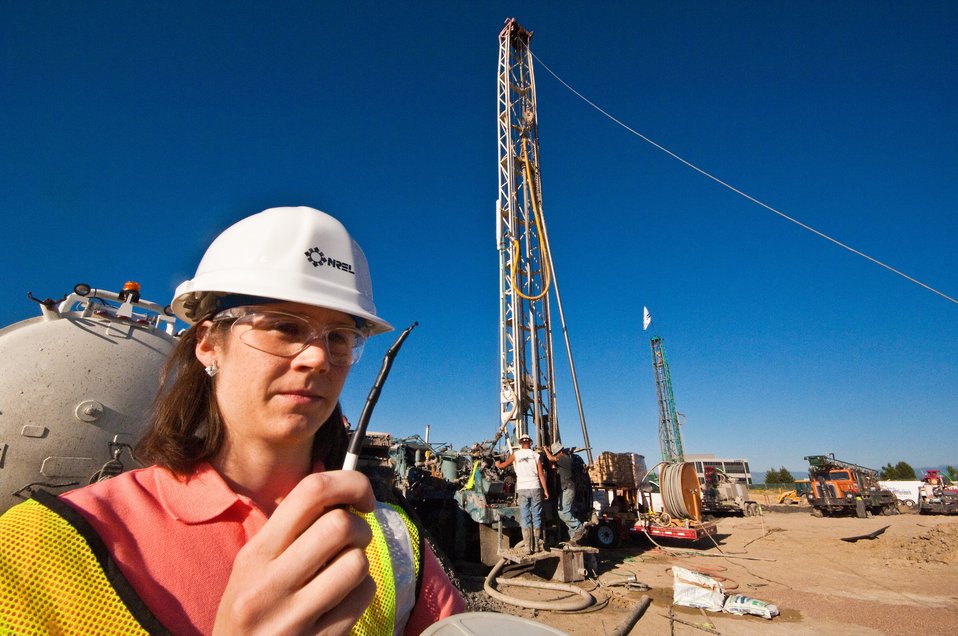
NREL SENIOR GEOTHERMAL ANALYST EXAMINES A HEAT SENSOR TO MAKE SURE IT'S IN WORKING ORDER BEFORE THE WIRE ATTACHED TO THE SENSOR DESCENDS 500 FEET UNDER THE IKEA STORE CONSTRUCTION SITE IN CENTENNIAL, CO.